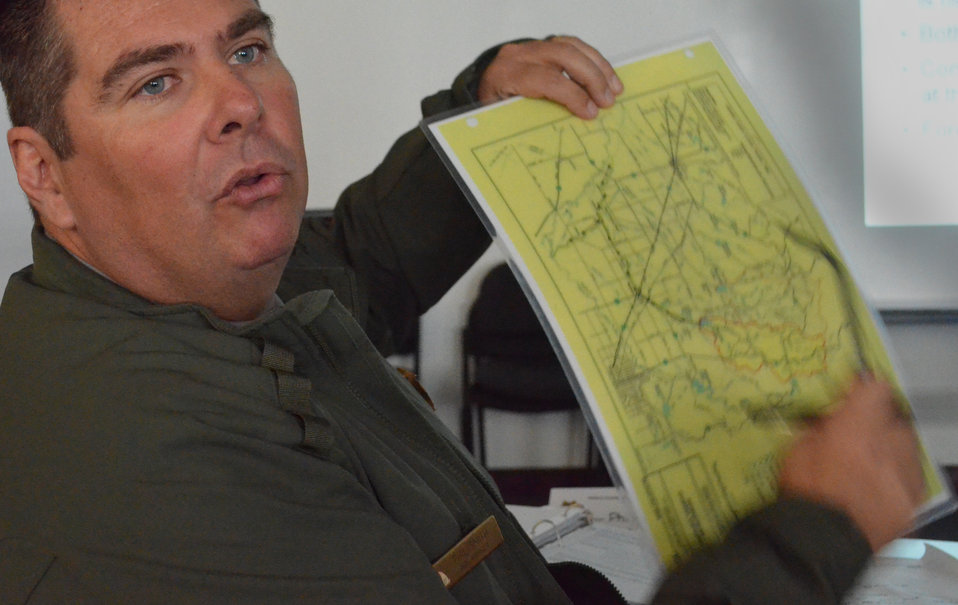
Responding to a scenario (Tabletop disaster exercise)

Phil Smith, park manager for the U.S. Army Corps of Engineers Sacramento District’s Hensley Lake, discusses the plan for a potential flood emergency response with state and local partners during a tabletop exercise in Madera, Calif., Oct. 25, 2012. The simulation brought together representatives from the Corps, Madera County Sheriff’s Department and California Highway Patrol along with firefighters and other first responders and local agencies from throughout the San Joaquin Valley.